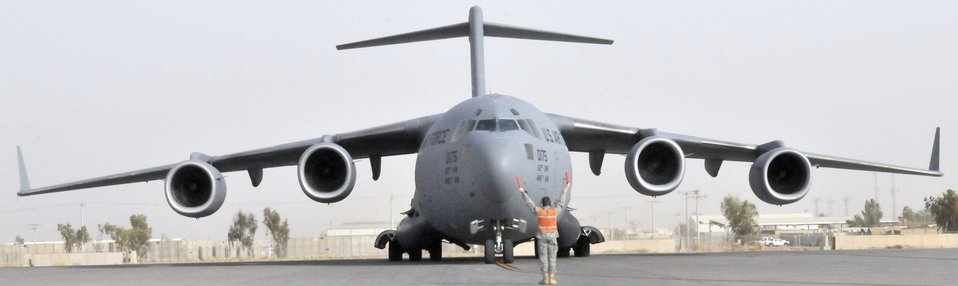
C-17 maintenance crew

Airman 1st Class Robert Jacoby marshals a C-17 Globemaster III into its parking spot July 12, 2010, at Joint Base Balad, Iraq. Airman Jacoby, a native of Athens, Ala., is deployed from Joint Base McGuire-Dix-Lakehurst, N.J.